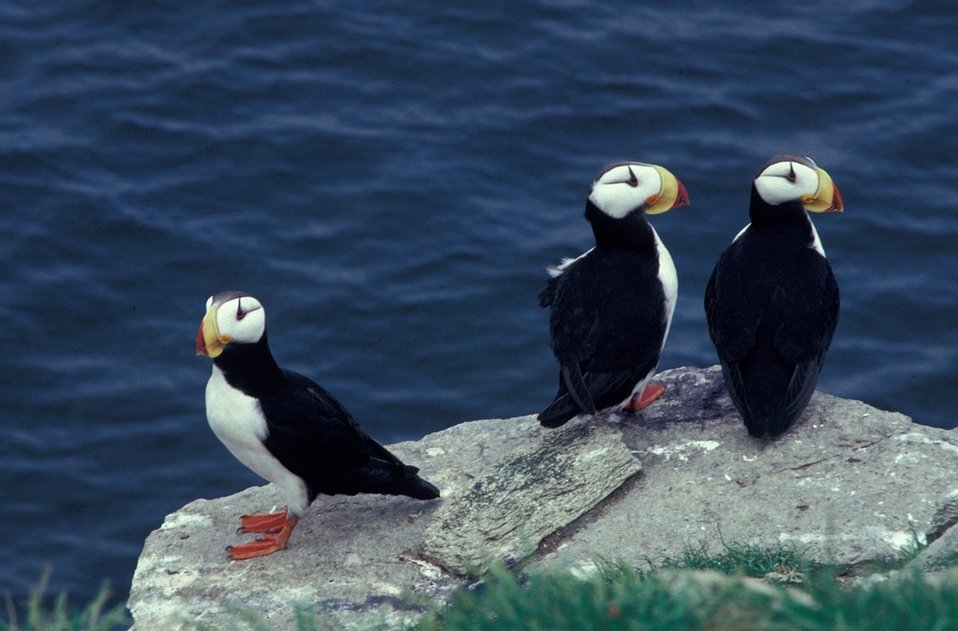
Horned puffin trio, Alaska Maritime NWR

A dapper trio of horned puffins perch along the water at Alaska Maritime National Wildlife Refuge. (USFWS)